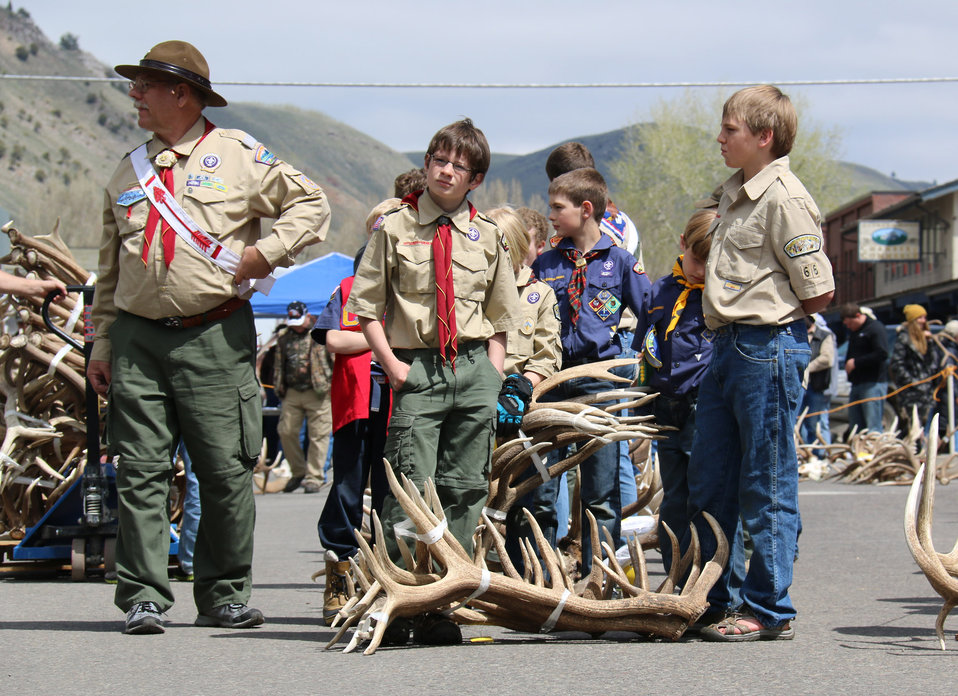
You're Next

Scouts line up near the stage, prepared to carry their assigned lot up to the stage to be auctioned off.